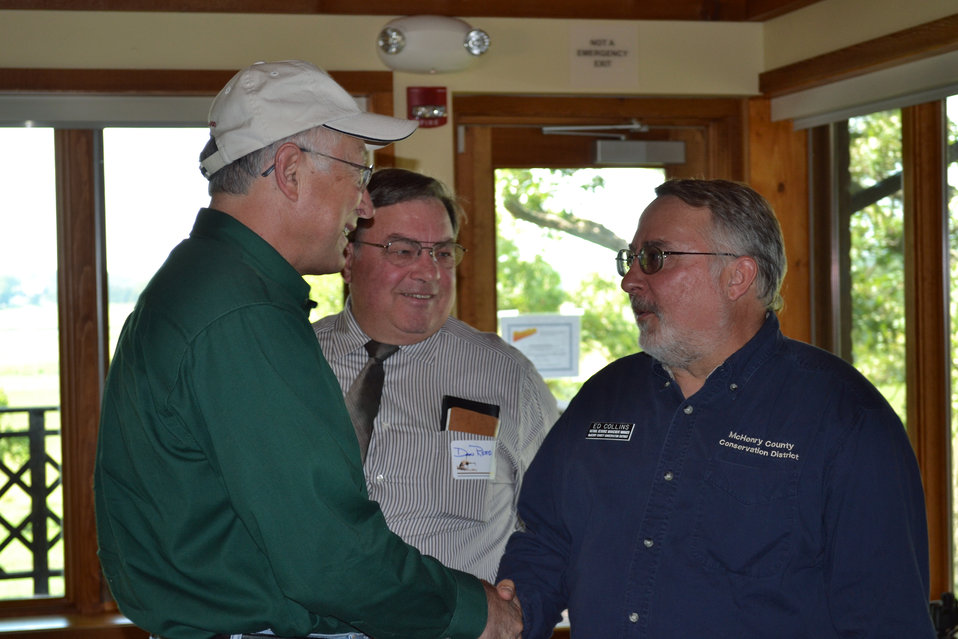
The man with the vision

Secretary of the Interior Ken Salazar met with McHenry County Conservation District Natural Resource Manager.